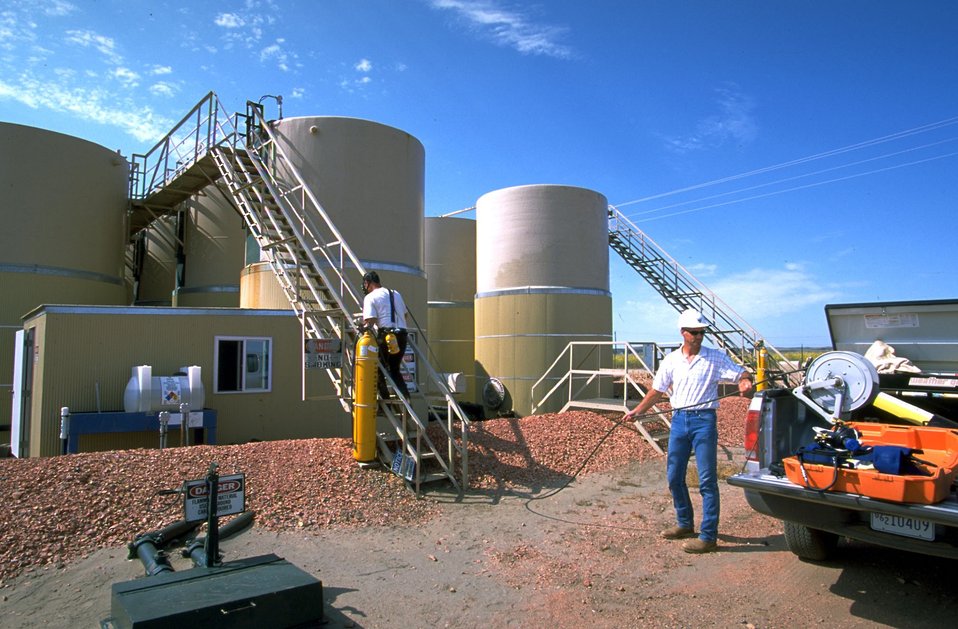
BLM petroleum enginering technician wearing safety equipment in preparation of a tank guaging.